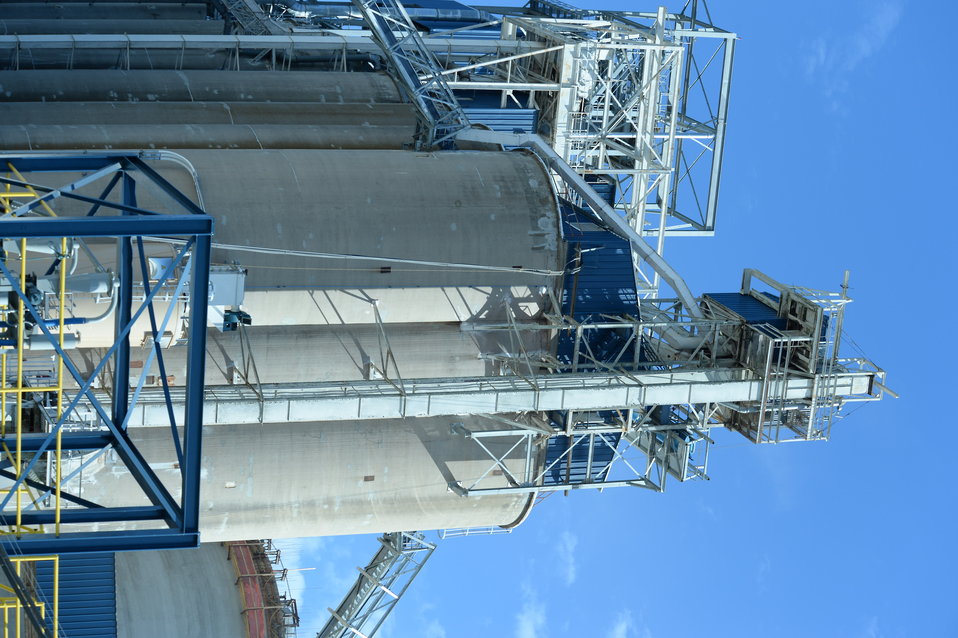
Grain is transferred from barges to holding tanks and tested in preparation for export near the port of New Orleans, LA on Tuesday, Nov. 19, 2013.